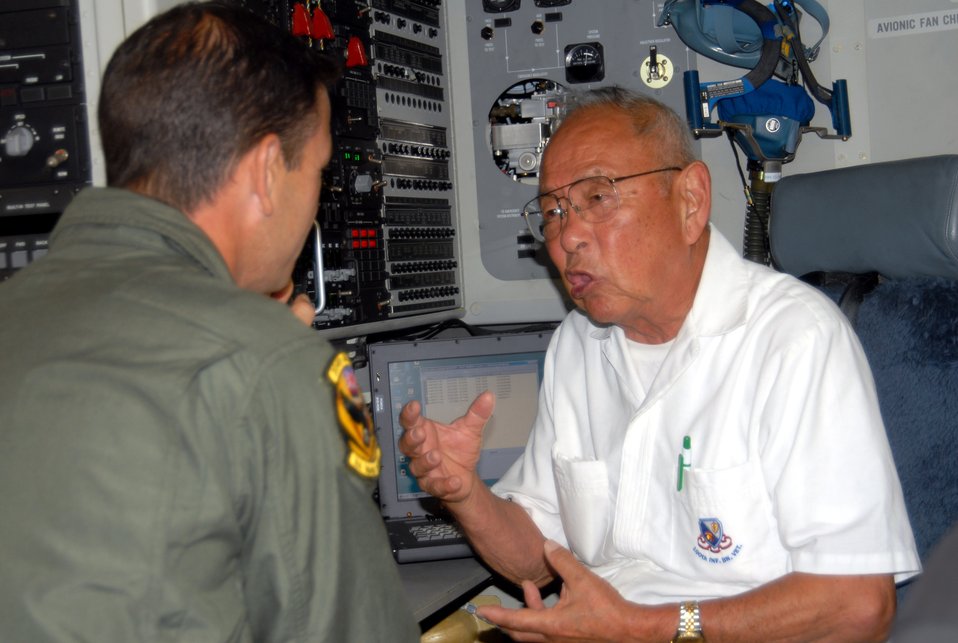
WWII veterans tour Hickam

Senior Master Sgt. Darrin Morris talks with World War II veteran Sam Fujikawa during a visit to a C-17 Globemaster III June 25 at Hickam Air Force Base, Hawaii. Mr. Fujikawa and other members of the 100th Infantry Battalion were touring the base. Sergeant Morris is a loadmaster with the Hawaii Air National Guard's 154th Wing.